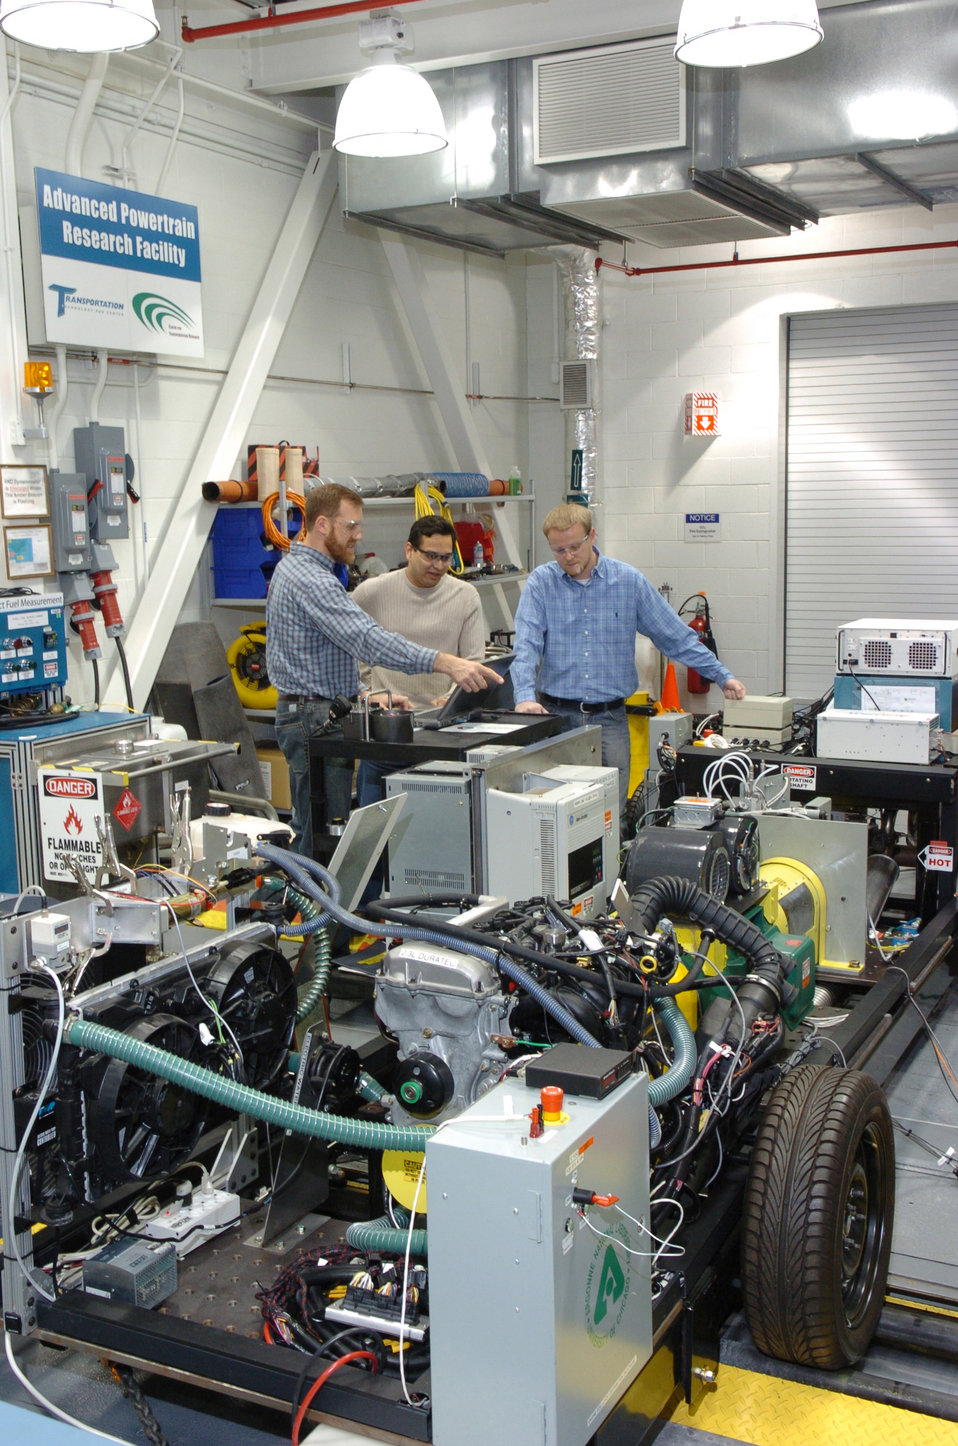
Argonne's Wheeled Mobile Advanced Technology Testbed is outfitted with scalable motor components, extensive instrumentation and a rapid prototyping control system to allow testing of Plug-In Hybrid Vehicle (PHEV) systems.

The Advanced Powertrain Research Facility is the nation's premier Hybrid Vehicle Test Laboratory, where the latest equipment and state-of-the-art transportation technology come together for development.